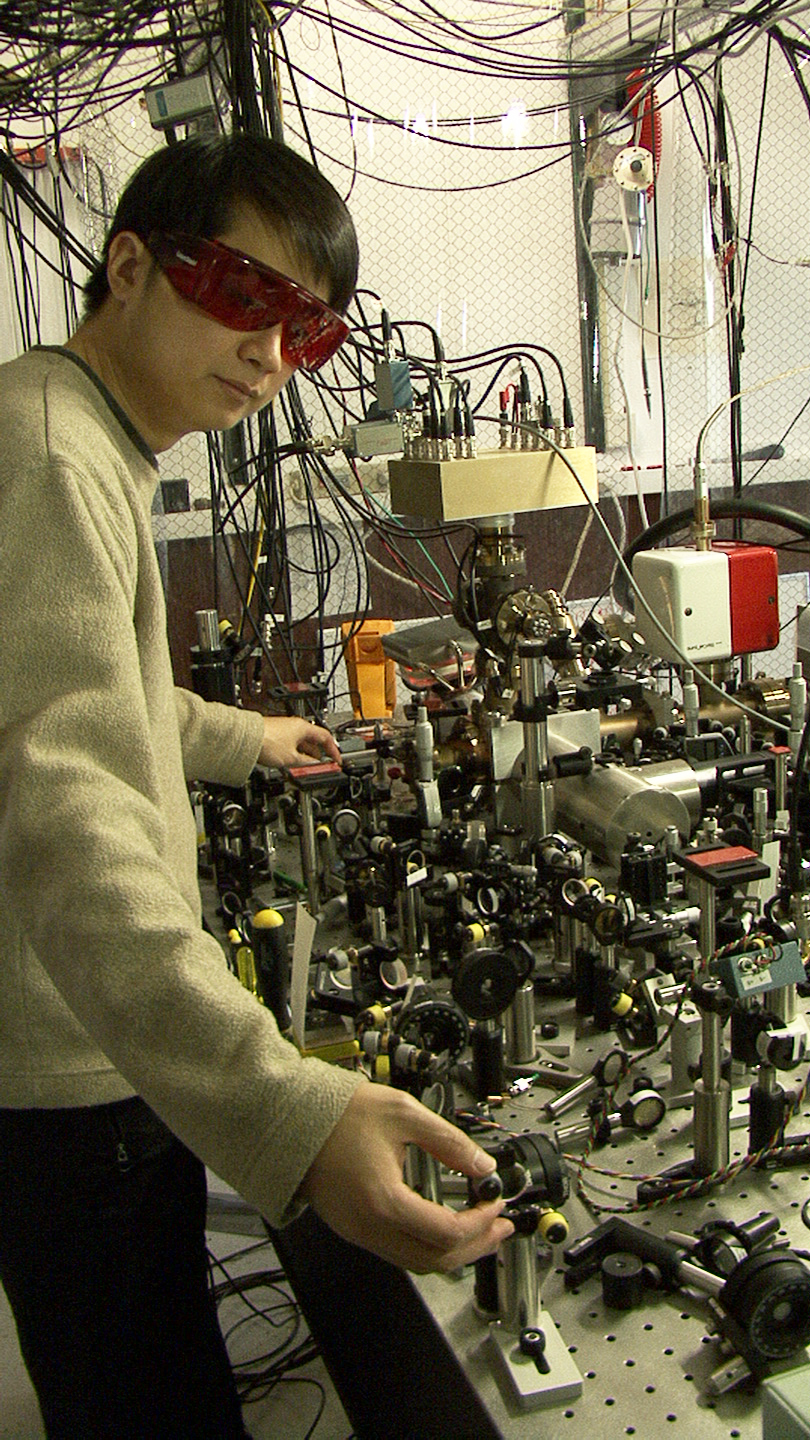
NISTs Second Quantum Logic Clock Based on Aluminum Ion is Now Worlds Most Precise Clock

NIST postdoctoral researcher James Chin-wen Chou with the worlds most precise clock, based on the vibrations of a single aluminum ion (electrically charged atom). The ion is trapped inside the metal cylinder (center right).